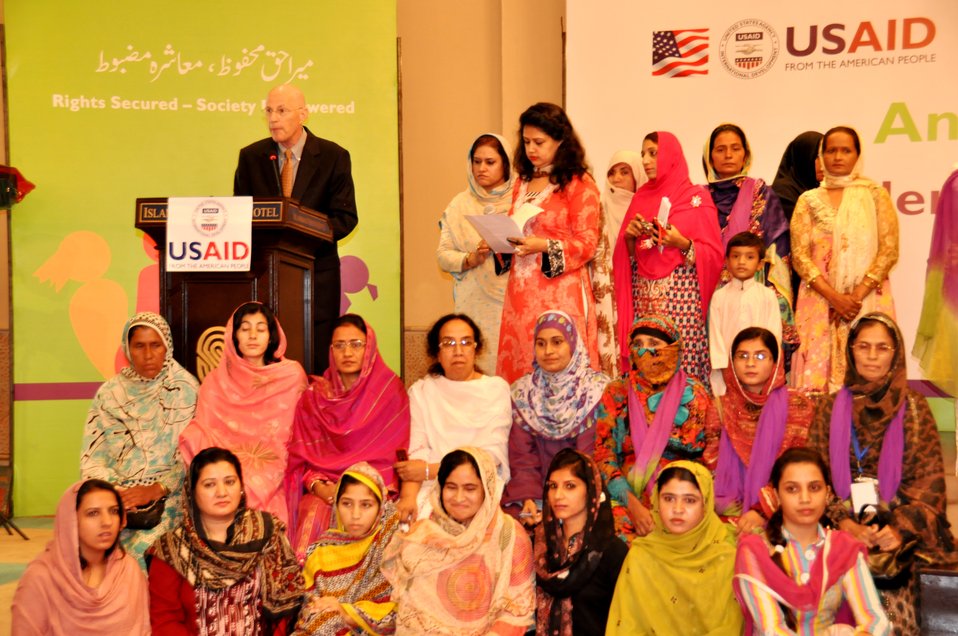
Annual Event- Gender Equity Program titled as “Rights Secured – Society Empowered”